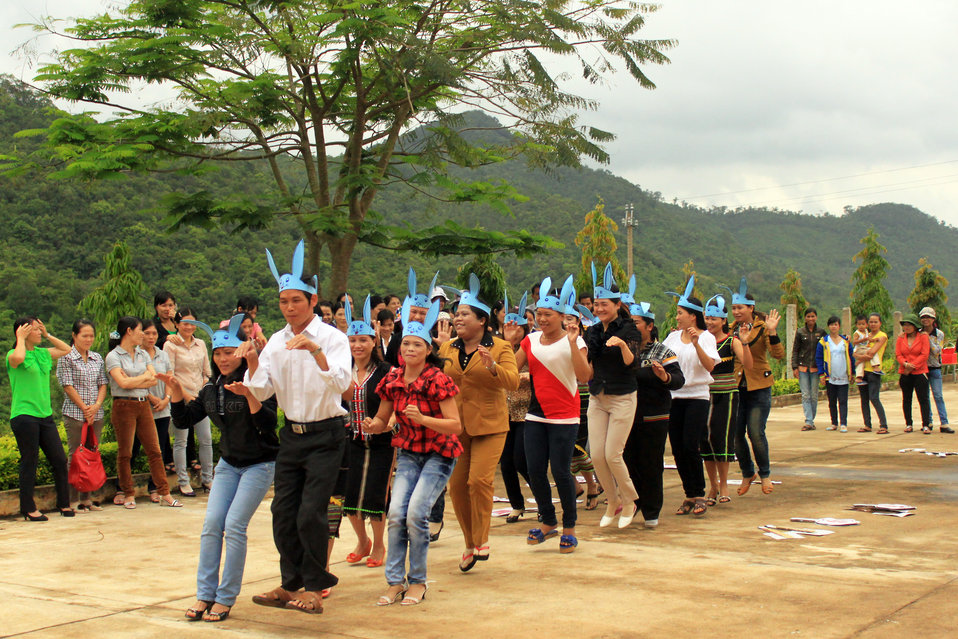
Teachers in Kon Tum practice what they learned from USAID-funded intensive training courses